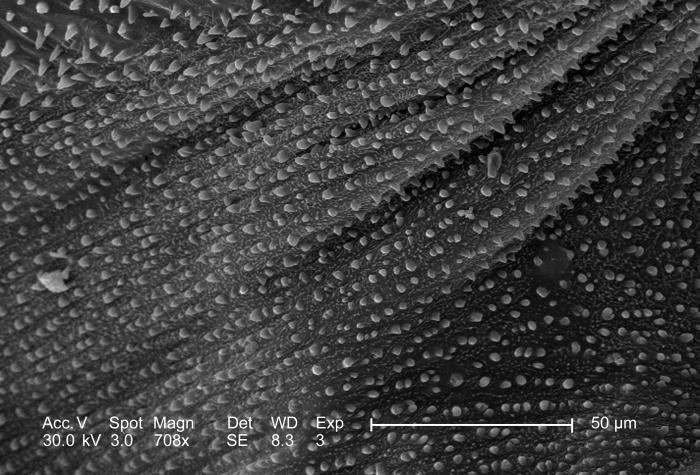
This scanning electron micrograph (SEM), magnified at 2832x, revealed the ornamentally adorned exoskeletal surface of an unidentified insect. The exoskeletal section was from the region occupying its inferior abdomen. Overall, the insect was described as being black, and its black wings were patterned with longitudinally oriented red stripes. It measured approximately .25 inches, and was found deceased on the ground of the Decatur, Georgia suburbs.